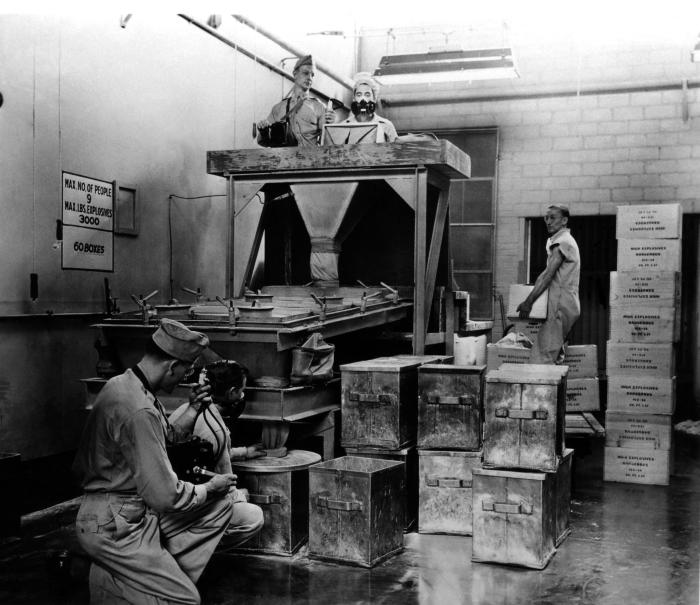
This photograph, provided by the Center for Disease Control's (CDC), National Institute for Occupational Safety and Health (NIOSH), depicted a number of Public Health Service (PHS) officers in the process of taking dust samples inside a military ordnance factory, in order to test for the presence of TNT (trinitrotoluene). It appears that the worker, at the top of the image, manning the workstation, was wearing a protective filtered breathing mask. However, the coworker at right was not wearing any such protection. Neither worker was wearing goggles, and the worker at right wore no gloves.